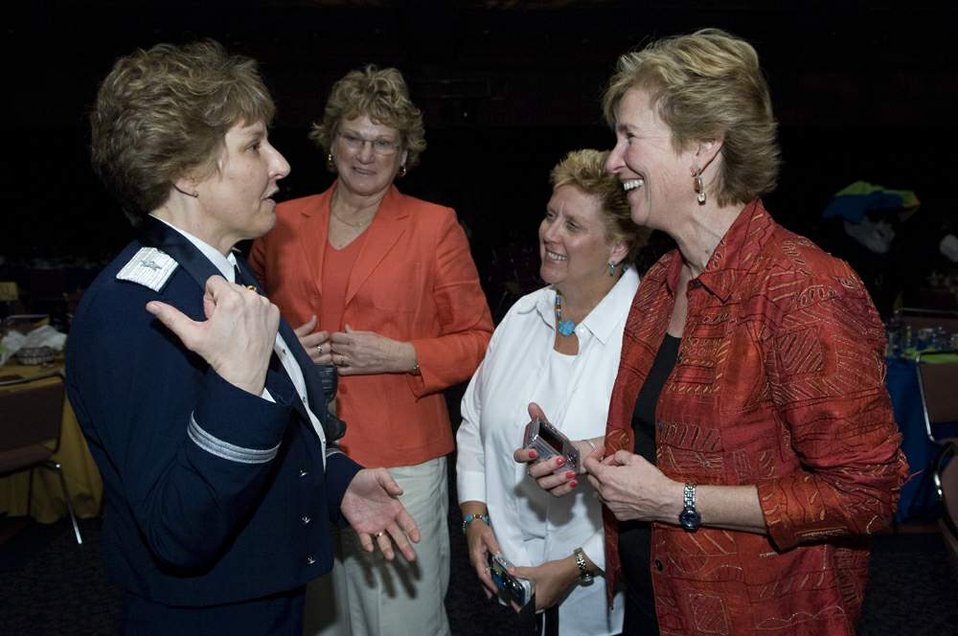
General participates in NCAA Women's Final Four

Brig. Gen. Michele D. Johnson speaks with 2008 Women's Final Four Salute dinner attendees and former Iowa State University basketball players (right to left) Connie Bauman, Darla Maldhauer and Donna Dalbella April 4 in Tampa, Fla. General Johnson is the most decorated female athlete in U.S. Air Force Academy history. She was selected by the NCAA to speak to women athletes and participate at numerous NCAA events before the 2008 NCAA Women's Final Four basketball tournament. General Johnson is the deputy director on the war on terrorism, Strategic Plans and Policy Directorate on the Joint Staff at the Pentagon.